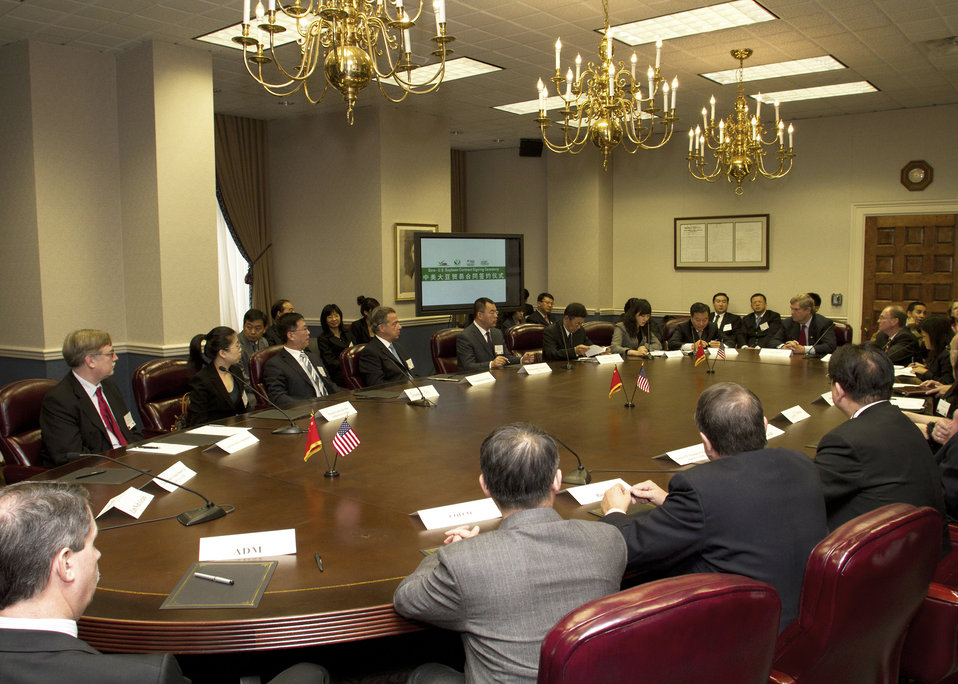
People’s Republic of China Vice Minister of Commerce Jaing Zengwei speaks at a signing agreement held at the U.S. in Washington, D.C., Department of Agriculture on November 22, 2010. The agreement is with a Chinese buying delegation and the U.S. soybean industry, indicating that the Chinese intend to purchase up to eight million metric tons of U.S. soybeans, valued at $3 billion. USDA photo 10di1559-707